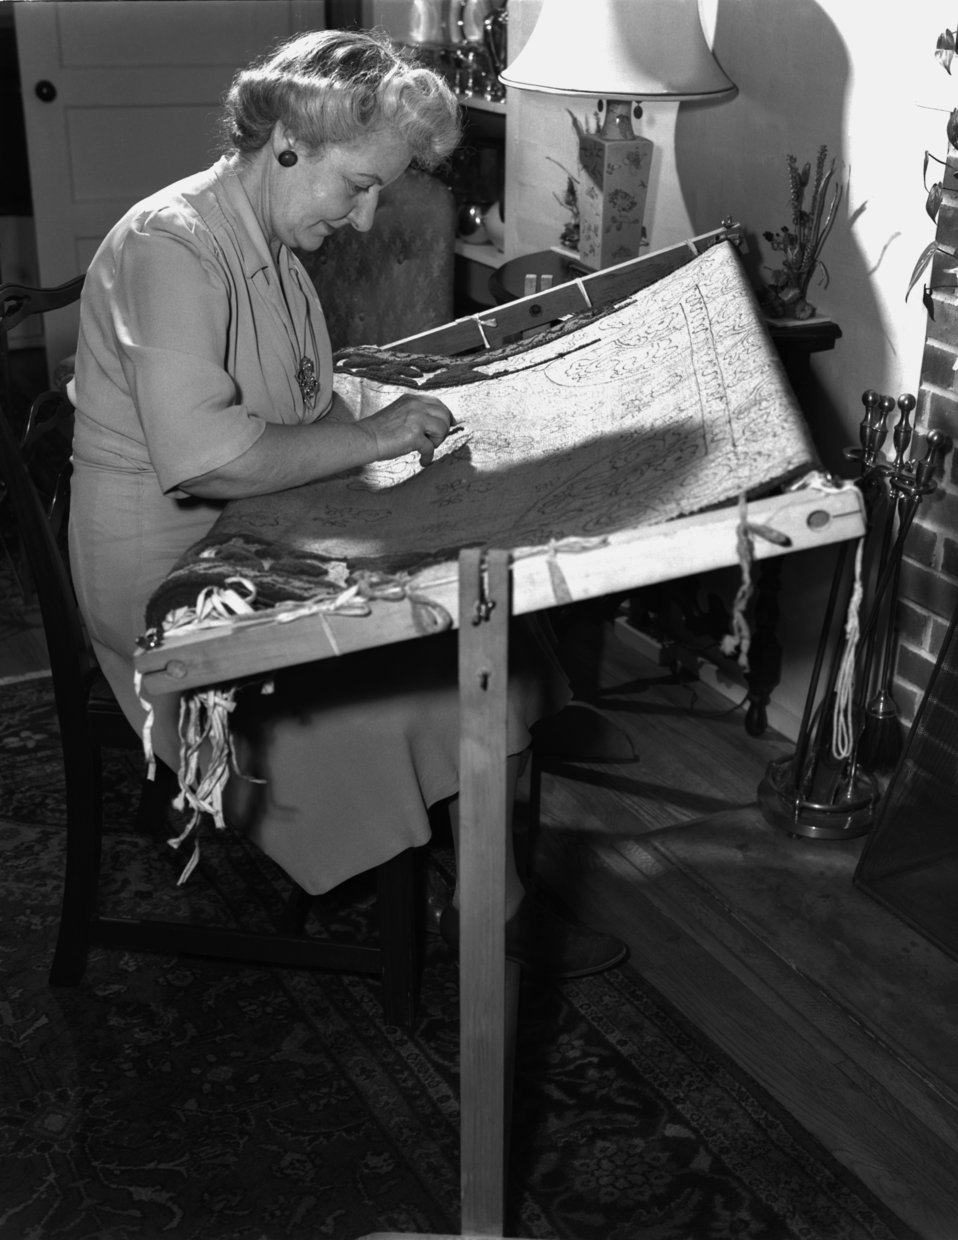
Mrs. M.K. Walsh Oak Ridge

3259-3b DOE photo Ed Westcott 1-17-1947 Oak Ridge Tennessee